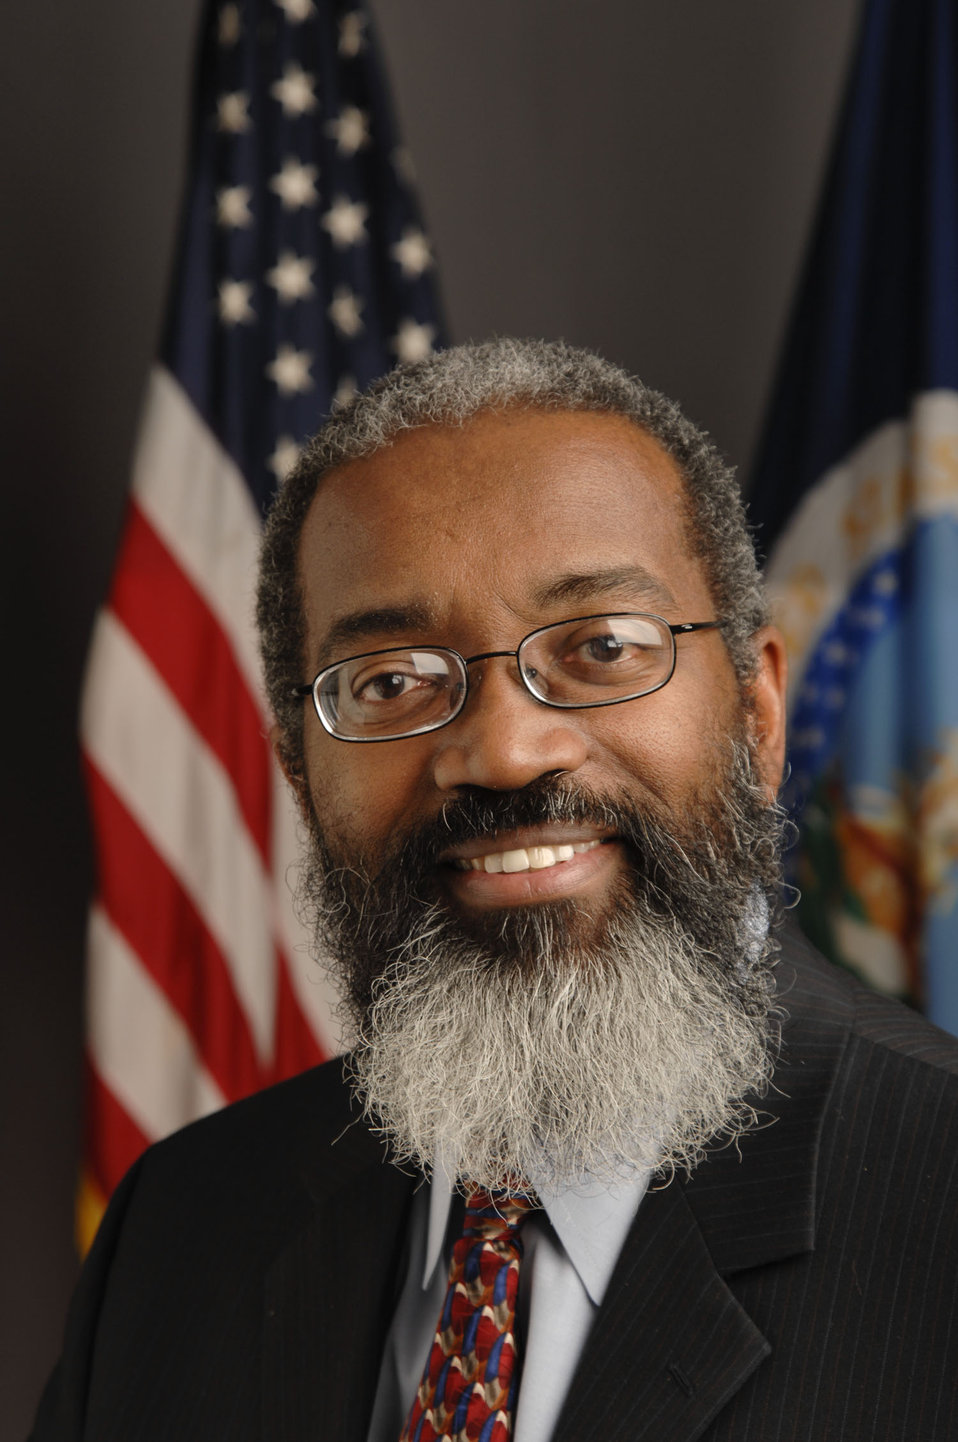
08di1021 Assistant Secretary for Administration Dr. Gregory Parham

U.S. Department of Agriculture (USDA) Assistant Secretary for Administration Dr. Gregory Parham.